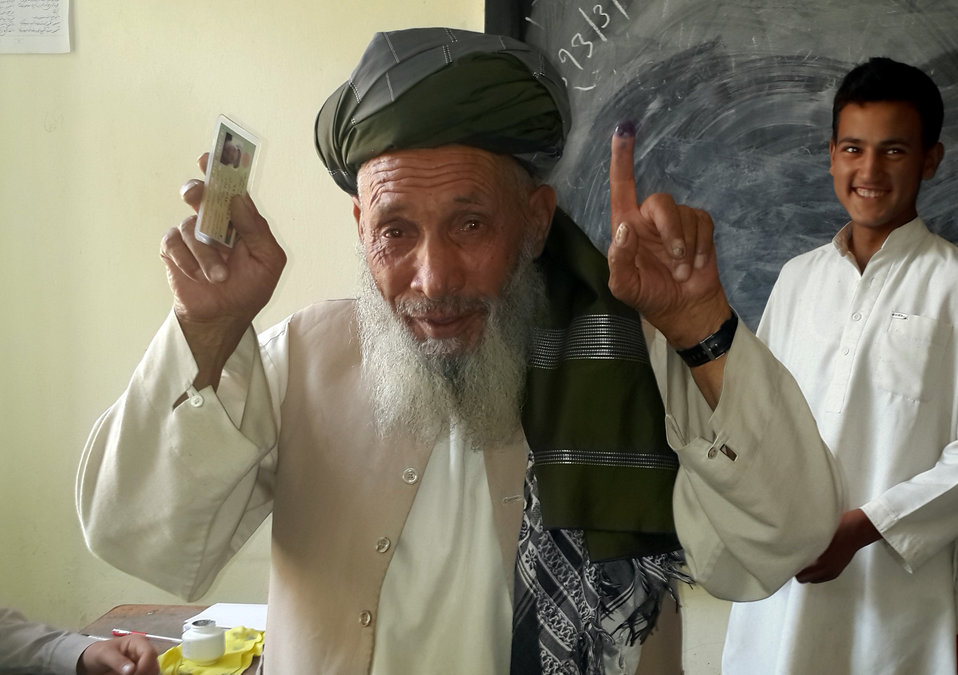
A man shows his inked finger and voting card after casting his vote in Afghanistan’s northern Panjshir province.